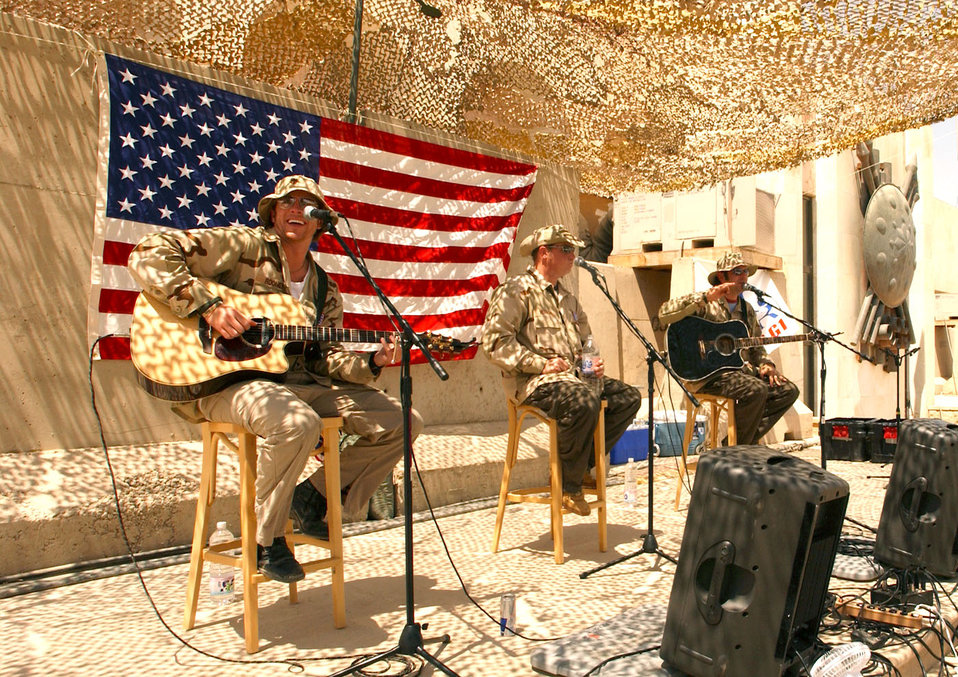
USO brings Rascal Flatts to Baghdad

BAGHDAD, Iraq -- Country music group Rascal Flatts performs for Airmen and Soldiers at Baghdad International Airport on Aug. 5 during their United Services Organization tour to support the people supporting Operation Iraqi Freedom.